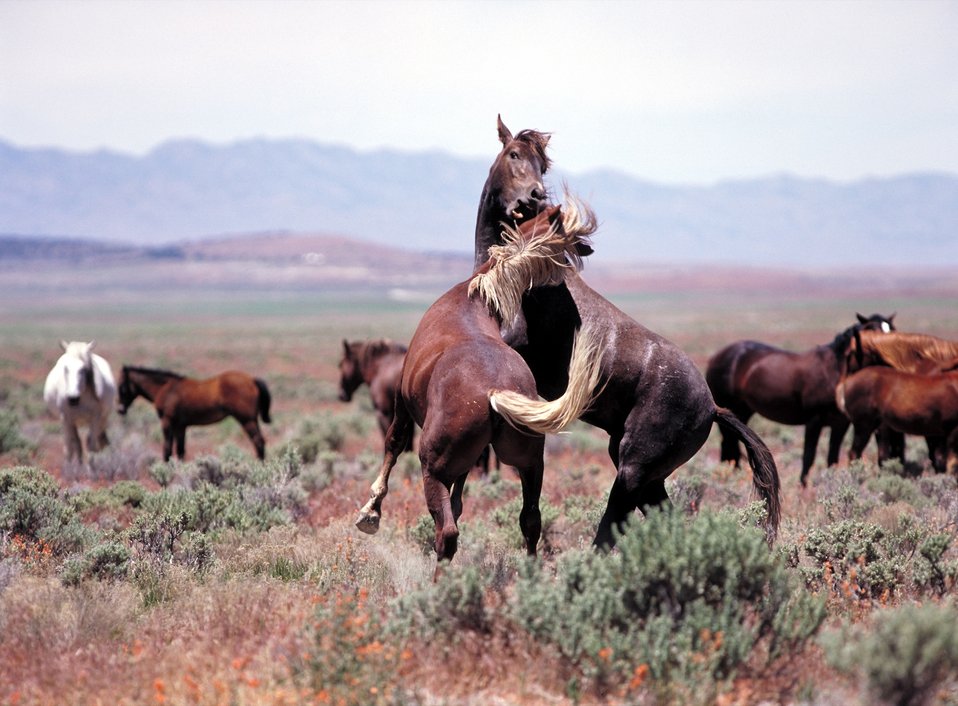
Onaqui Herd near Dugway, Utah.